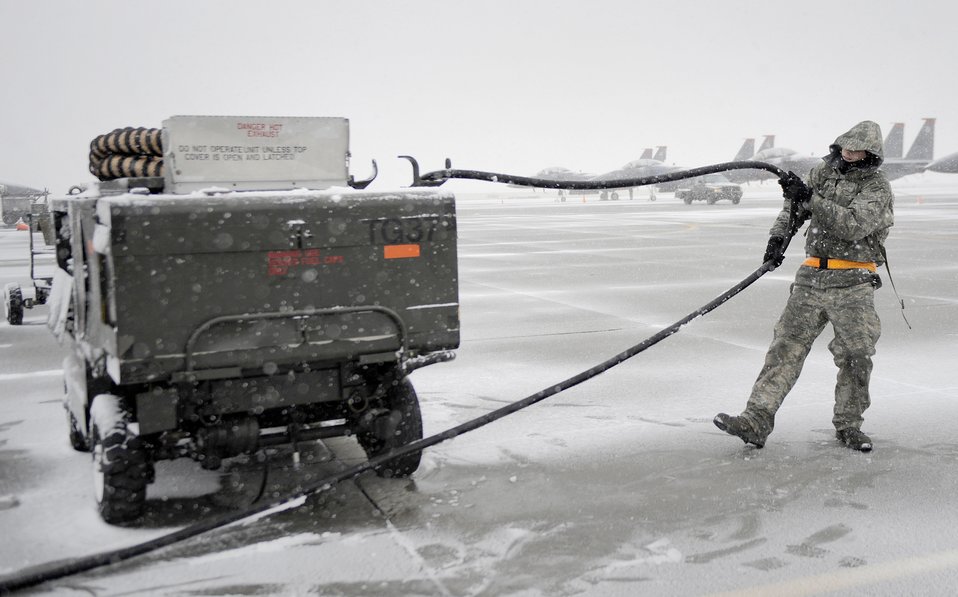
Airmen work under harsh weather conditions

Senior Airman Gavin Washburn puts away a hose during an exercise Nov. 21, 2010, on the flightline at Mountain Home Air Force Base, Idaho. Wing officials use operational readiness exercises to gauge the wing's ability to meet wartime taskings at a deployed location. The evaluation includes initial response, readiness, combat operations, ability to survive and operate, self aid and buddy care, and mission support. Airman Washburn is assigned to the 391st Fighter Squadron as a crew chief.